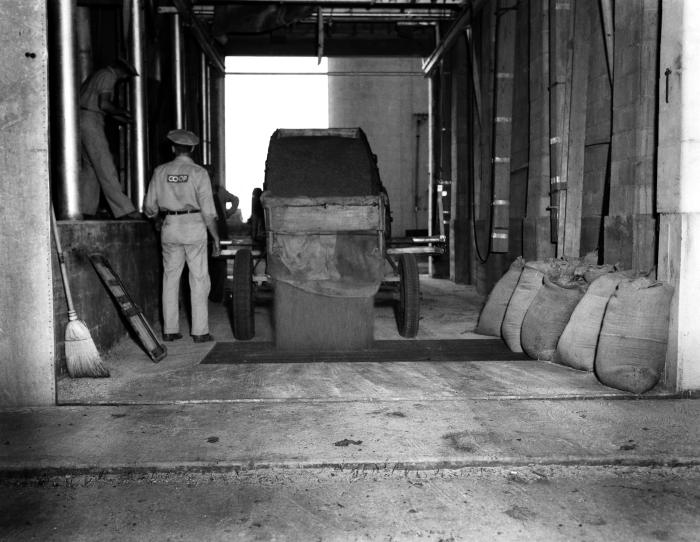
This October, 1951 photograph was provided by the Center for Disease Control's (CDC), National Institute for Occupational Safety and Health (NIOSH). The image depicted two men in the process of unloading mercury-treated grain, which had been brought inside the confines of a grain elevator storage facility. During the 1950s and 1960s, mercury was used in agricultural settings as a fungicidal seed treatment in the form of methylmercury, and had been known to enter the human-inclusive food chain when farm-raised birds such as turkeys and phesants consumed mercury-treated grains. The customery use of mercuric fungicides, has for the most part, been discontinued in the developed world, but may still be implemented in the underdeveloped world. This compound need not be ingested in order to impart its neurotoxic effects to humans, but may also be readily absorbed through the skin as well, with the nervous system being the site of its selective concentration.